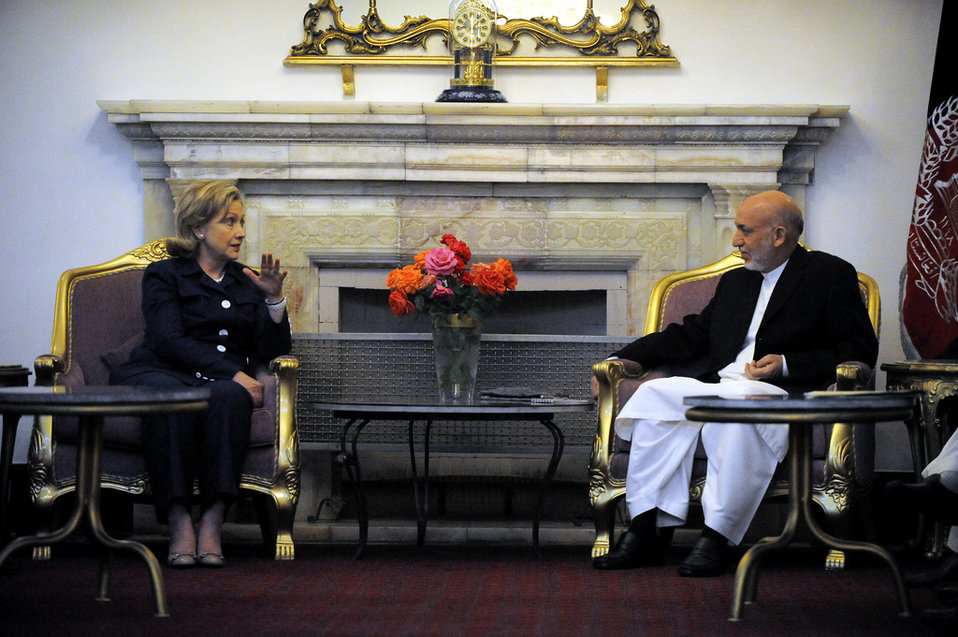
Secretary Clinton and President Karzai Discuss U.S.-Afghanistan Relations

U.S. Secretary of State Hillary Rodham Clinton and Afghan President Hamid Karzai discuss U.S.-Afghanistan relations at the Presidential Palace in Kabul, Afghanistan, on July 19, 2010.